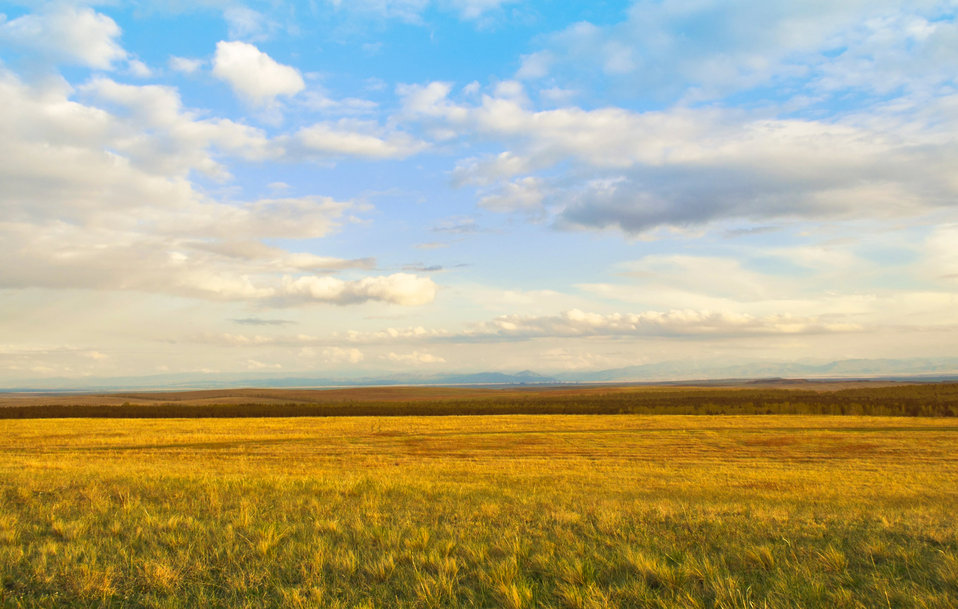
Sunset

Beautiful sky at dusk in the fields.